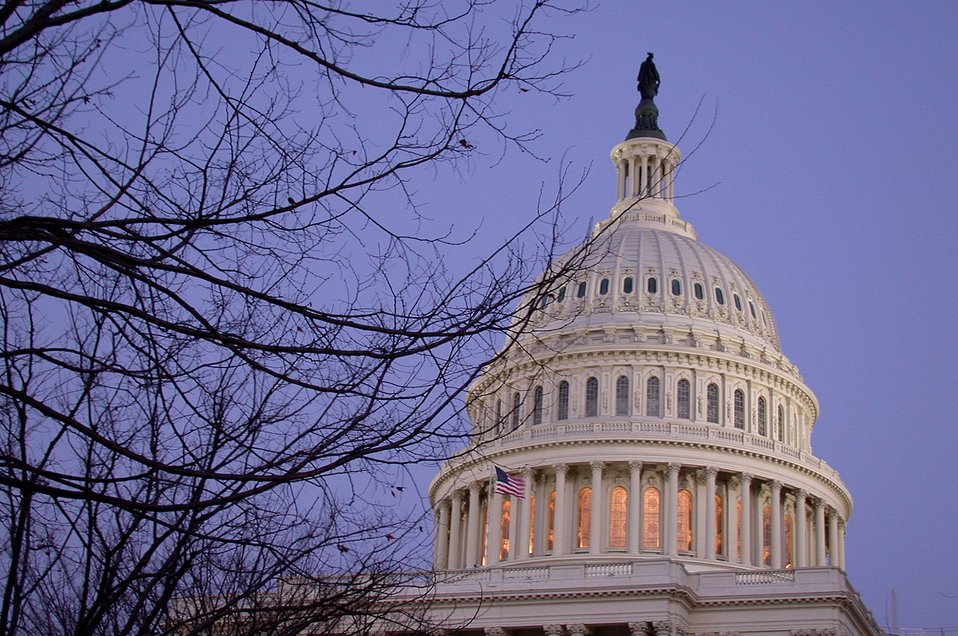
United States Capitol building.